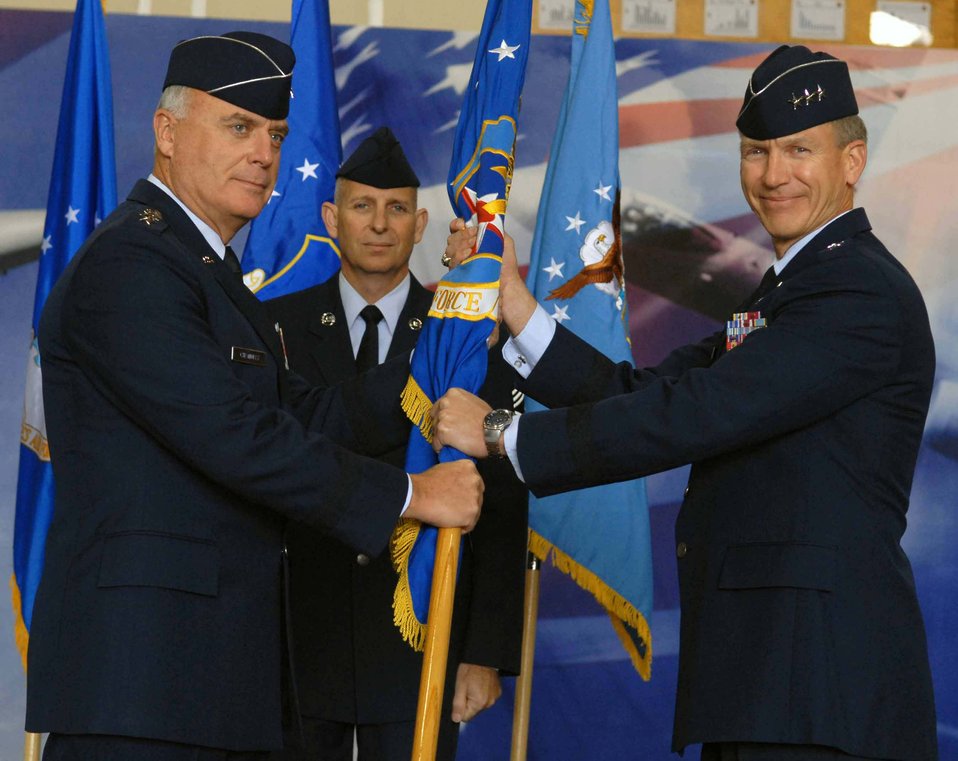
7th Air Force officials welcome new commander

Lt. Gen. Jeffrey A. Remington (right) accepts command of the 7th Air Force from Gen. Carrol H.